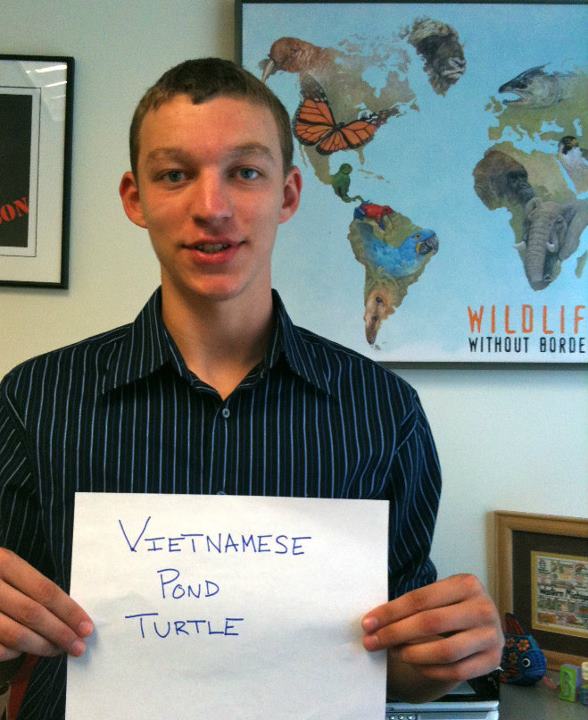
Matt Hrynkow, 'Vietnamese Pond Turtle,'

International Affairs participates in FFI's In Our Hands campaign